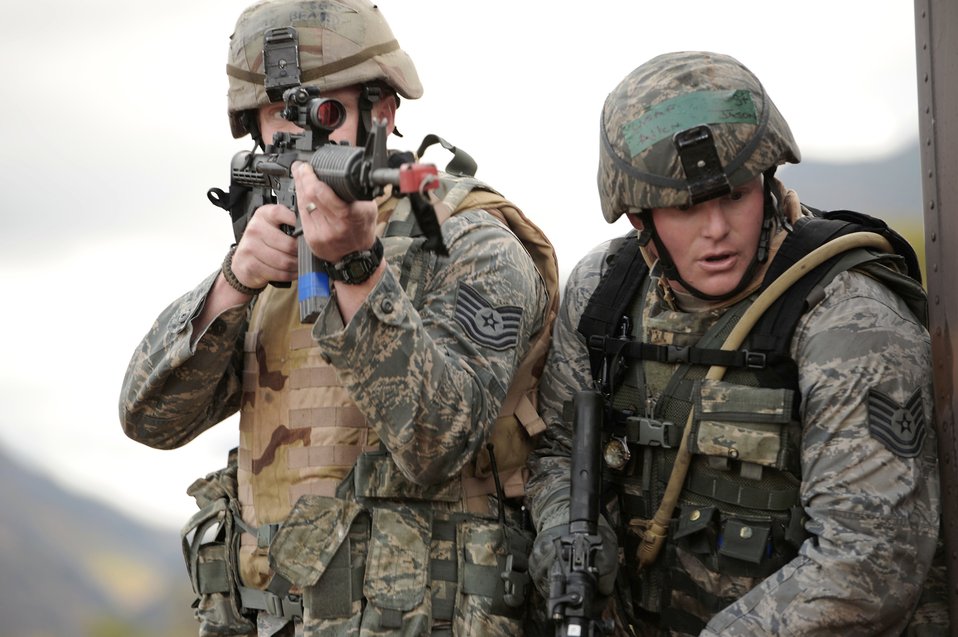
Operational Readiness Exercise 10-4

Tech. Sgts. Ron Beard and Jason Allen prepare to enter a building during Operational Readiness Exercise 10-4 Oct. 7, 2010, at Hill Air Force Base, Utah. The exercise will prepare Airmen for an upcoming inspection next month. Sergeants Beard and Allen are assigned to the 419th Security Forces Squadron.